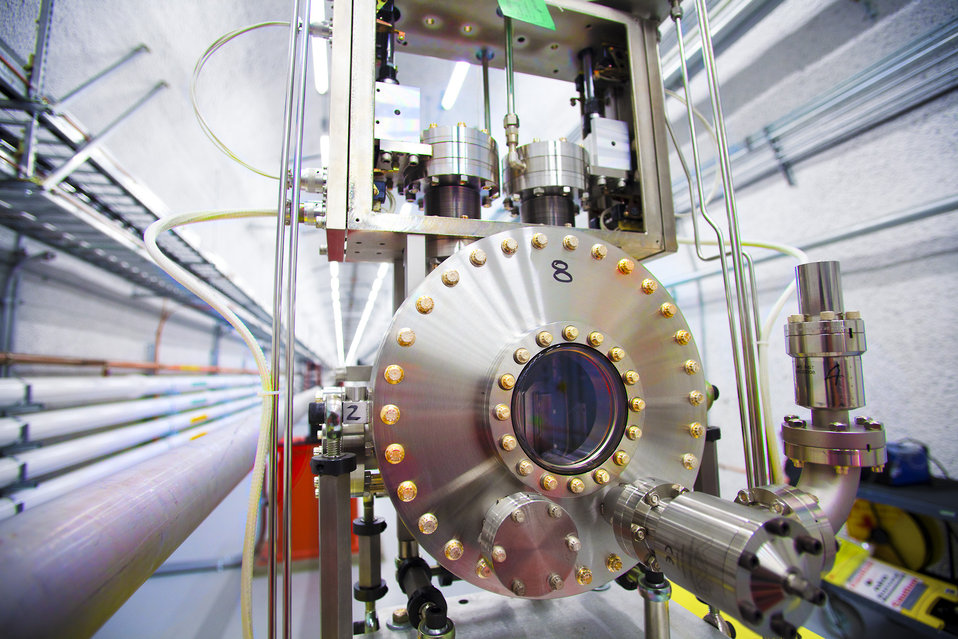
Beam stopper device prior to installation in the x-ray tunnel between the two experimental halls of the Linac Coherent Light Source at SLAC National Accelerator Laboratory.